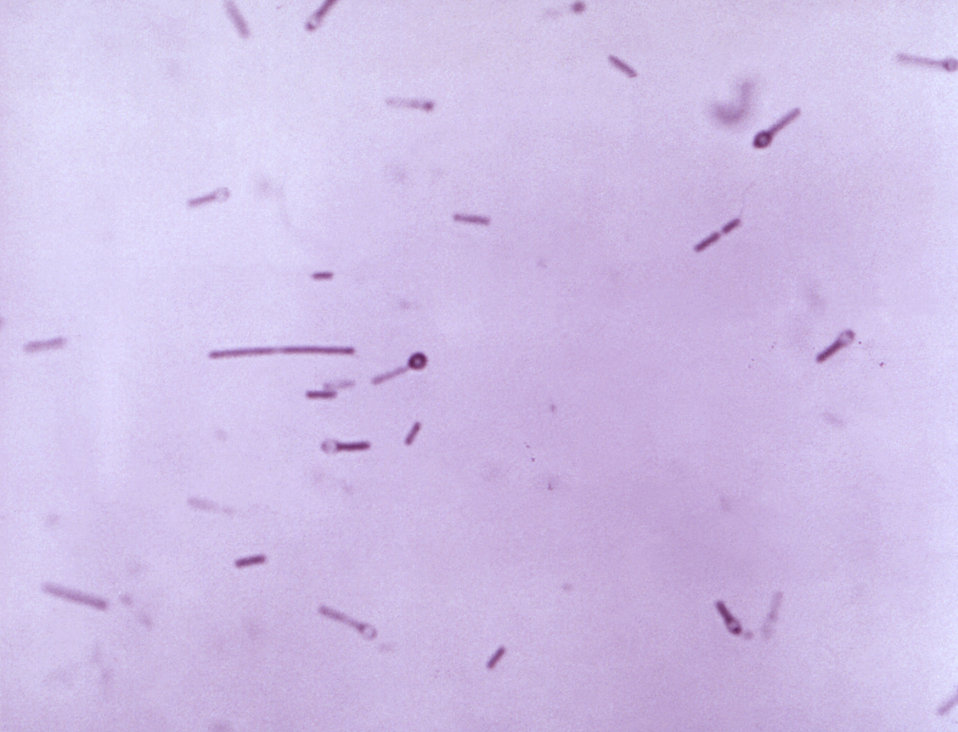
Magnified 956X, this Gram-stained photomicrograph depicted numbers of the Gram-positive Clostridium tetani bacteria, which had been cultivated on a blood agar plate (BAP), over a time period of 48 hours.